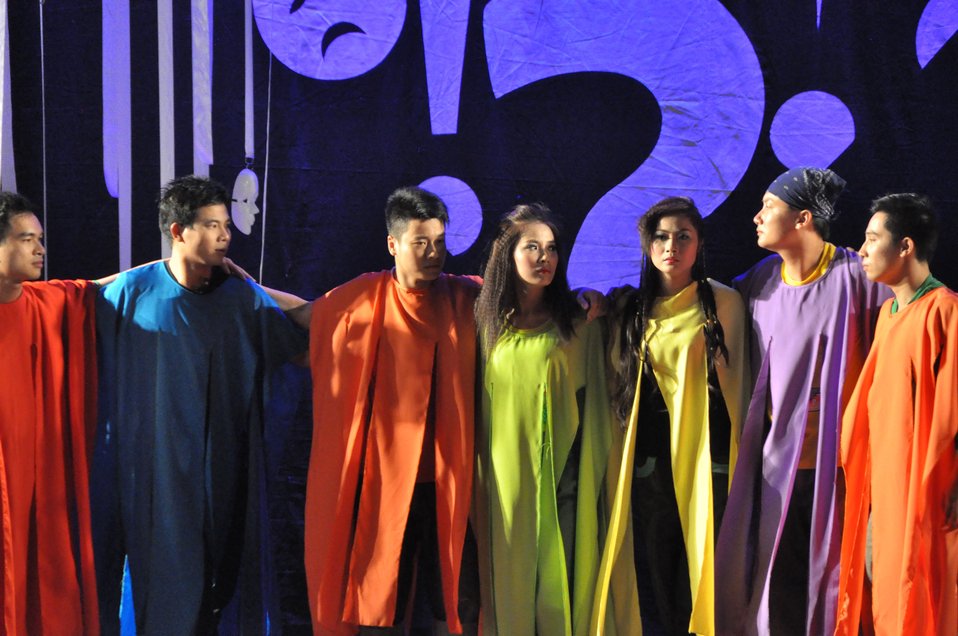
PEPFAR Musical Questions and Exclamations

Hanoi, May 17, 2013